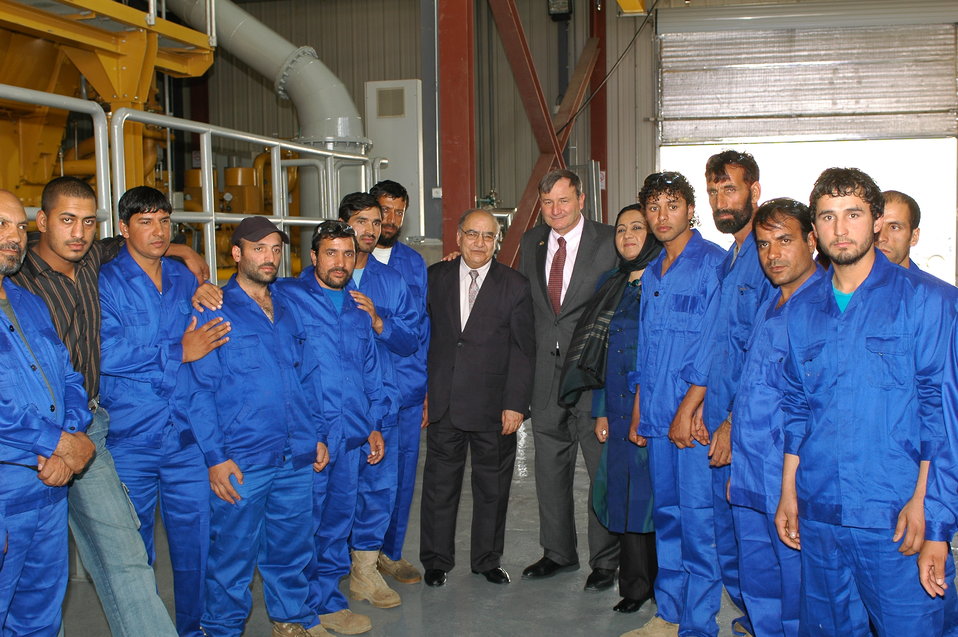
105 MW Tarakhil Power Plant Handover